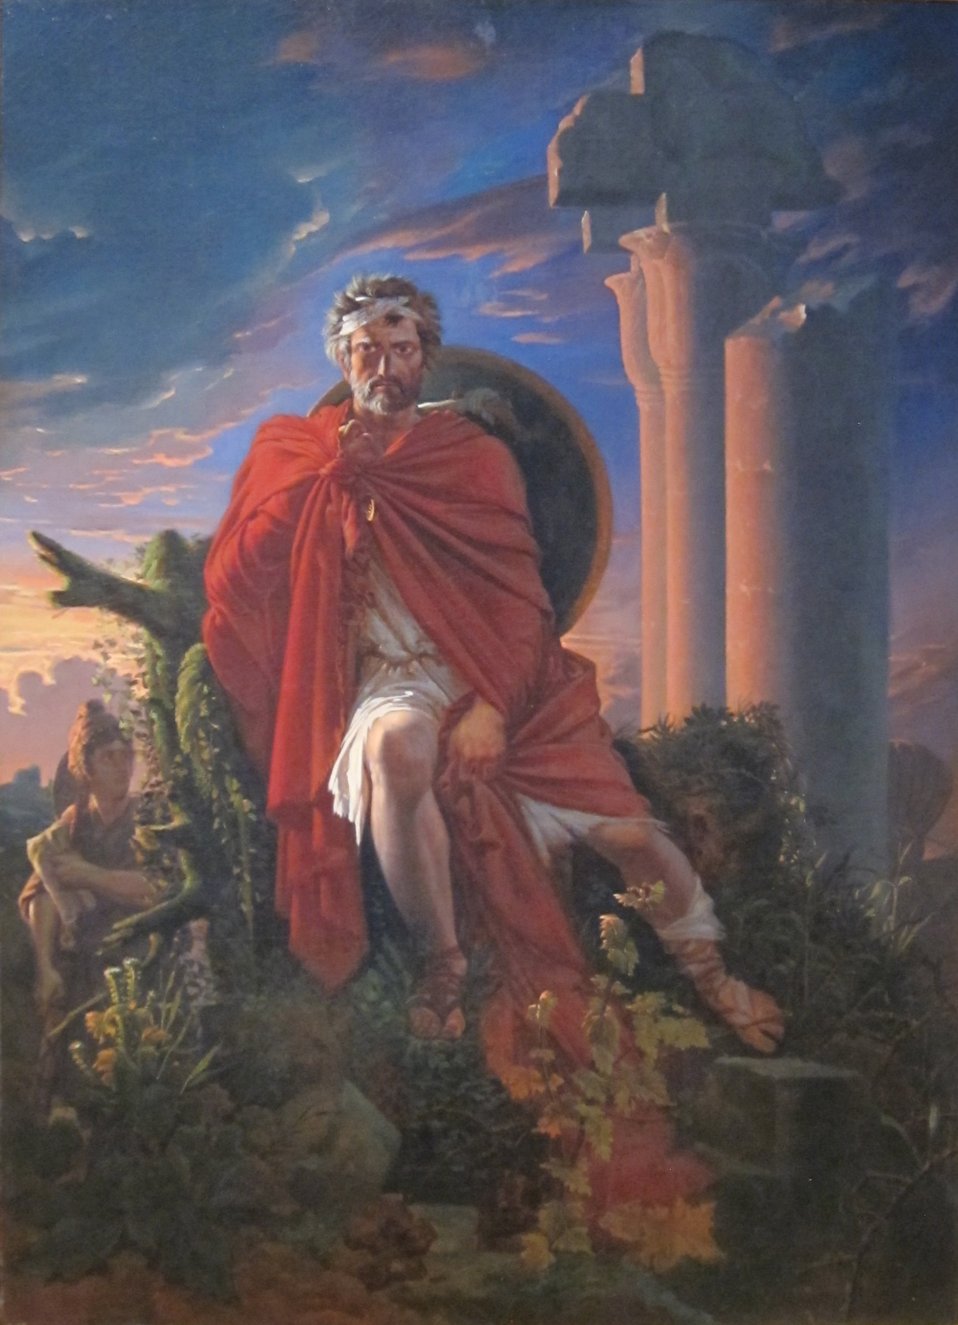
'Marius Meditating on the Ruins of Carthage' by Pierre-Nolasque Bergeret, Dayton Art Institute